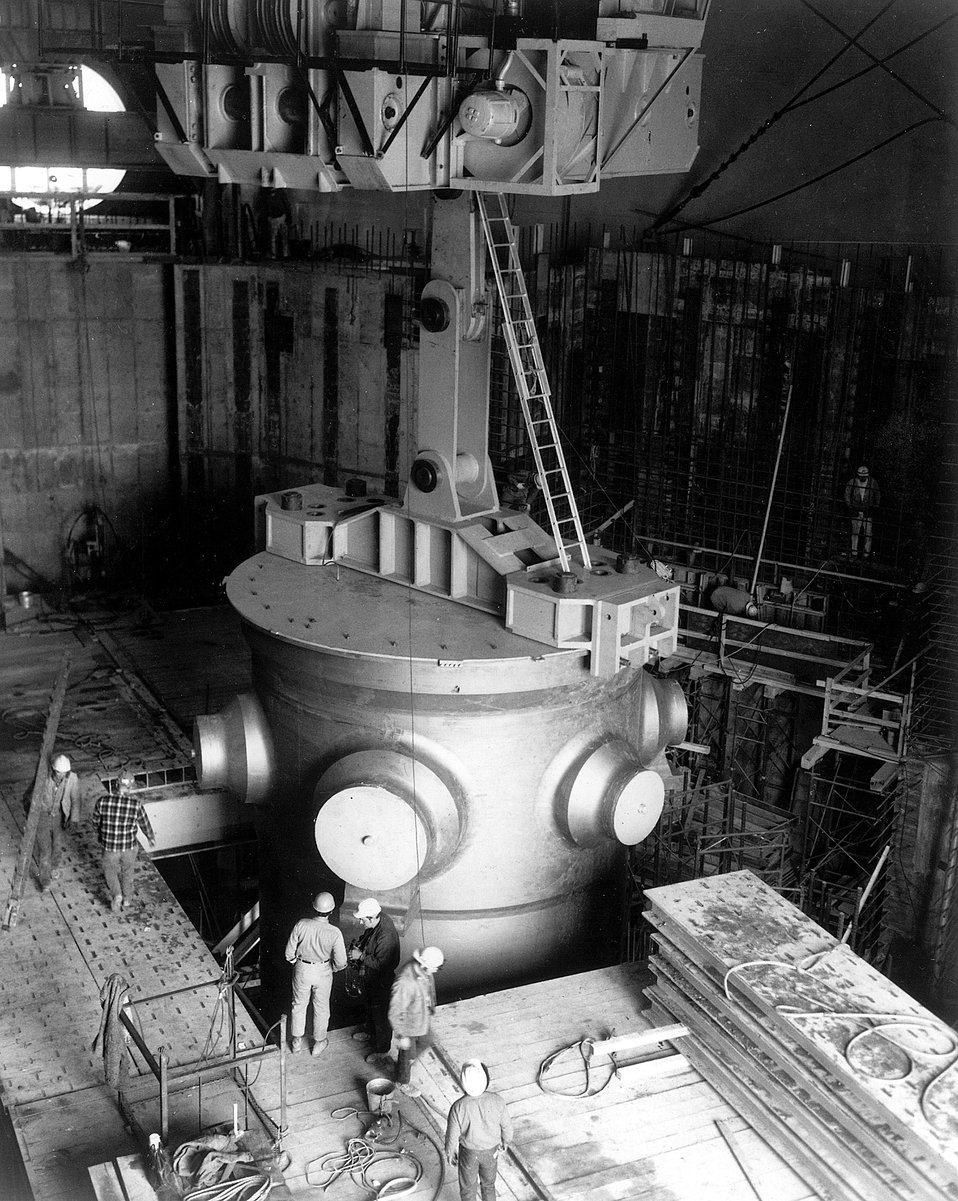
Reactor vessel nearing its final position inside the containment building. Baltimore Gas & Electric's Calvert Cliffs Nuclear Power Plant. Circa 1971.